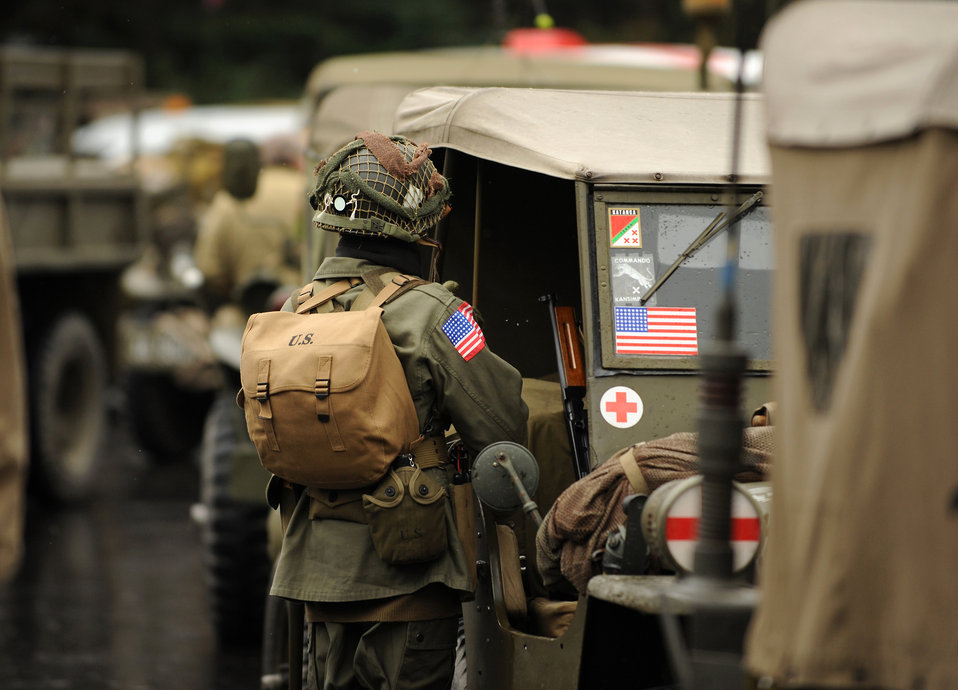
Airmen participate in 32nd Annual Bastogne Historic Walk

A World War II re-enactor prepares for a military convoy Dec. 12, 2009, during the 32nd Bastogne Historic Walk in Bastogne, Belguim. The walk commemorated the 65th anniversary of the Battle of the Bulge.